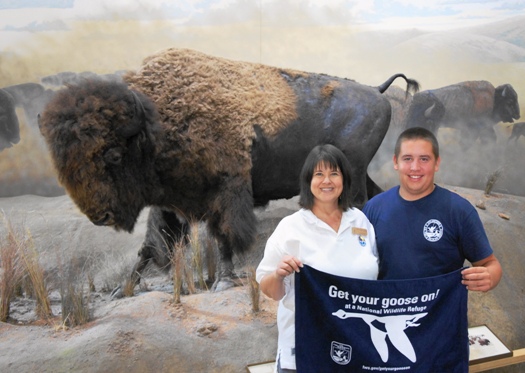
Get Your Goose On!

Wichita Mountains National Wildlife Refuge in Oklahoma.